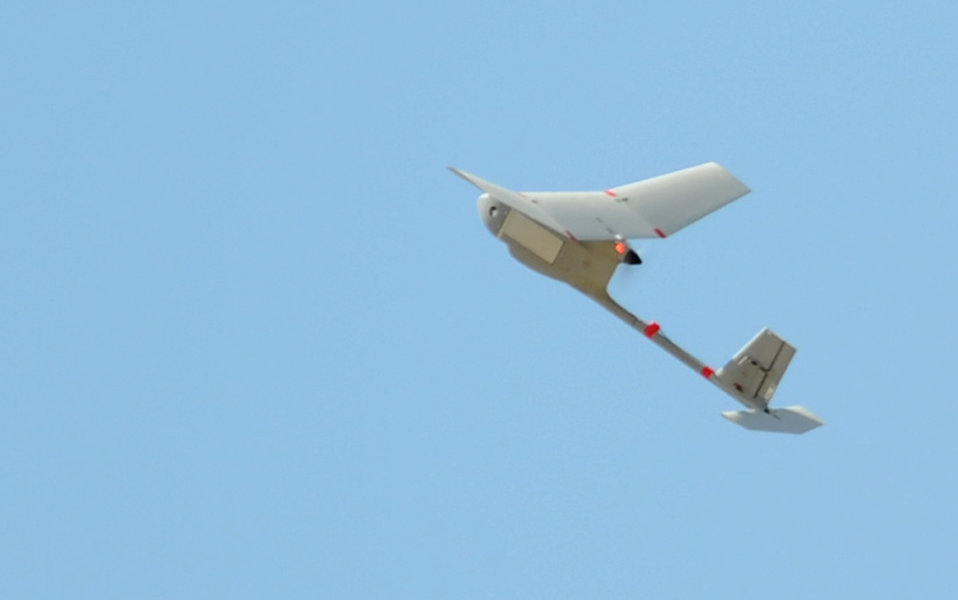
Airmen launch RQ-11B Raven

An RQ-11B Raven performs its mission at Kirkuk Regional Air Base, Iraq, March 23, 2010. The Raven is remotely piloted by a mission operator and vehicle operator who work side by side to coordinate on what they are seeing and what direction the device is flying.